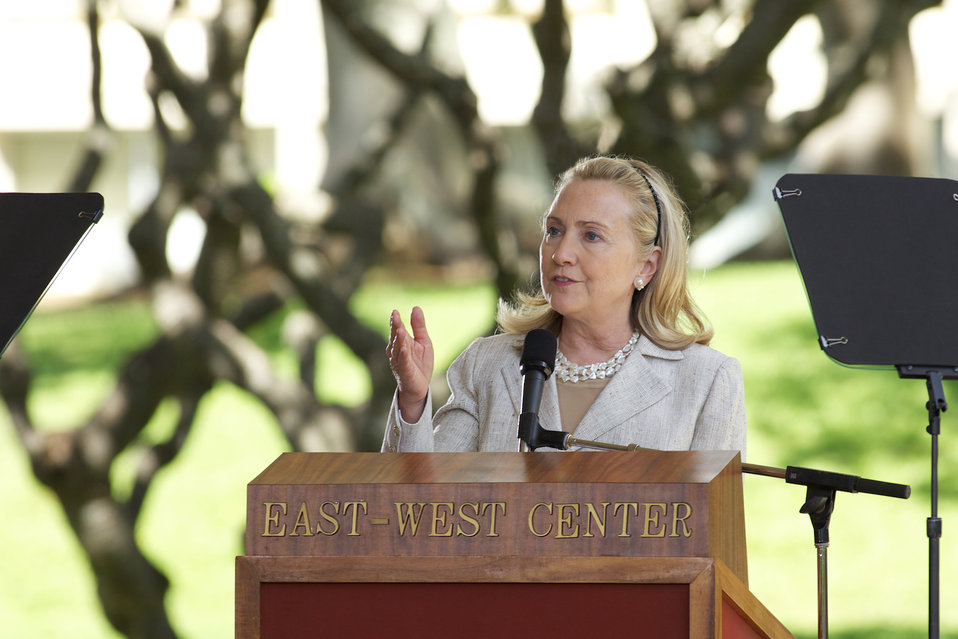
Secretary Clinton Delivers Remarks at the East West Center

U.S. Secretary of State Hillary Rodham Clinton delivers remarks at the East West Center on the campus of the University of Hawaii in Honolulu, Hawaii on November 10, 2011.